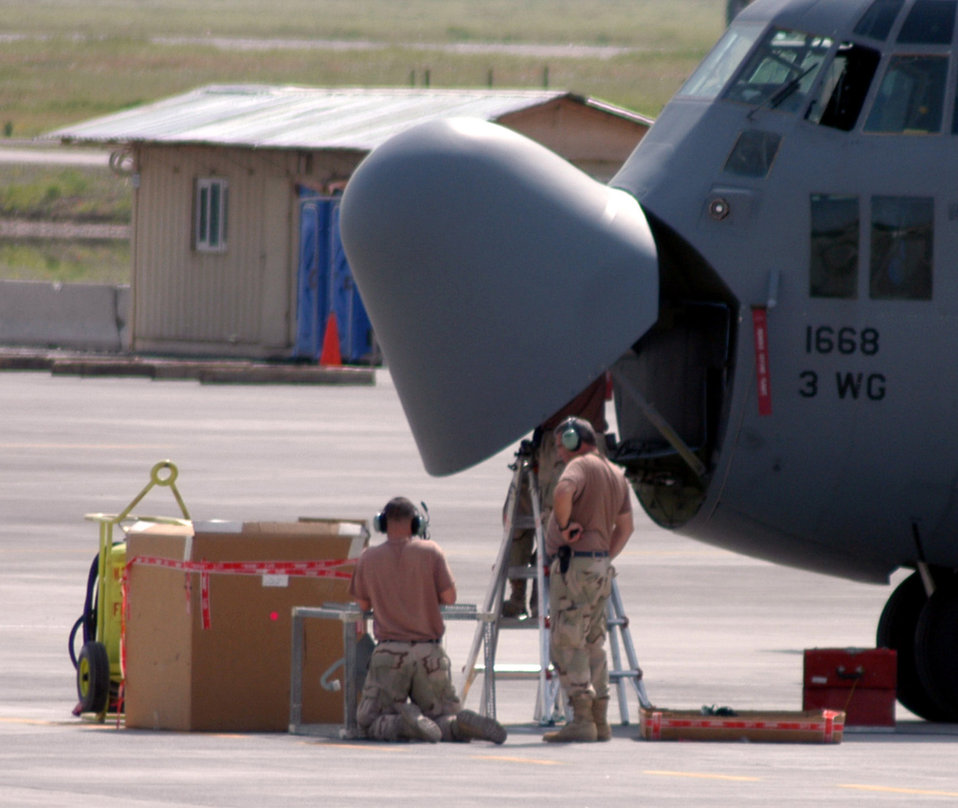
Who nose?

KARSHI-KHANABAD AIR BASE, Uzbekistan -- C-130 Hercules maintenance Airmen repair a C-130's avionics system here April 28. The Airmen and aircraft are deployed to the 416th Air Expeditionary Group here supporting Operation Enduring Freedom.